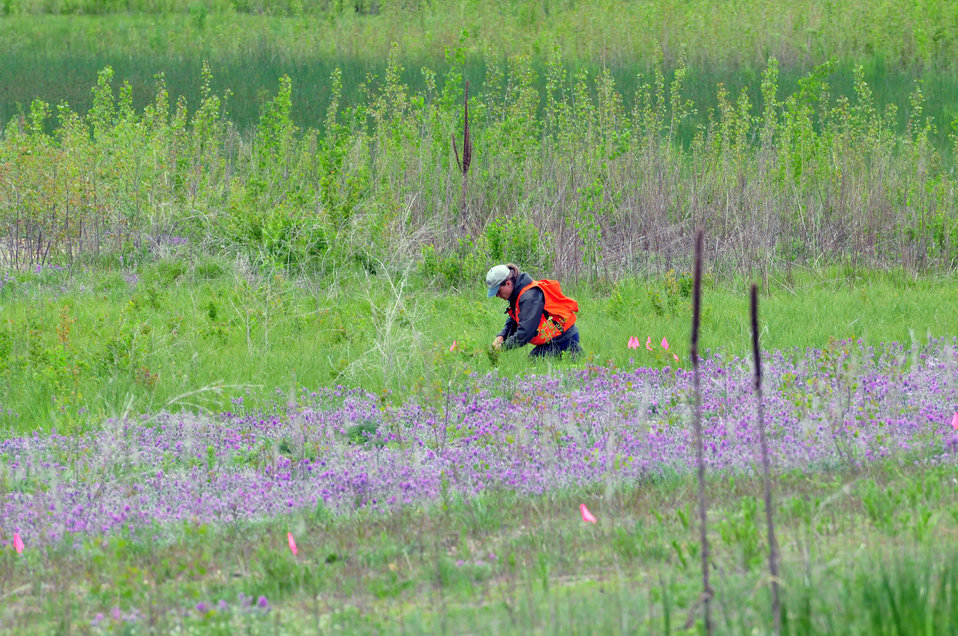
Fassett's Locoweed Survey

Biologist surveying for Fassett's locoweed. Purple flower is Fassett's locoweed. Photo by USFWS; Joel Trick